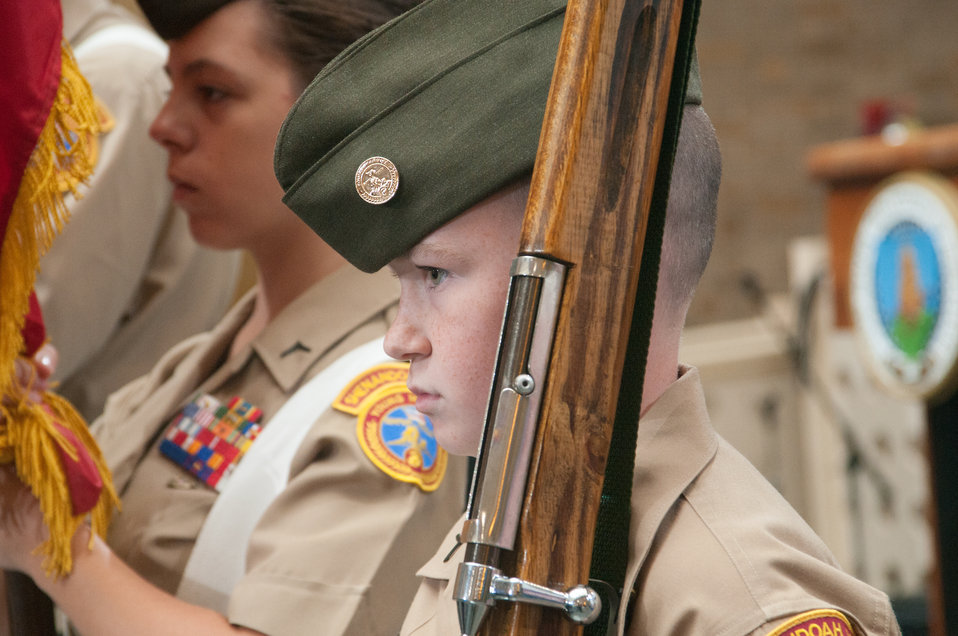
The Colors are presented by the Color Guard from the Young Marines of the Marine Corps League during the 2013 Combined Federal Campaign Opening Ceremony on Tuesday, Sept 17, 2013 in the Whitten Building, U.S. Department of Agriculture (USDA), Washington, D.C. Employees took personal time to attend and participate in fund raising activities that generated donations and donation registrations that will help support charities. The Combined Federal Campaign (CFC) is the largest and most successful workplace charitable giving drive in the world. CFC is the only authorized charitable organization solicitation of Federal employees in their workplaces. CFC is structured to support and to promote philanthropy through a voluntary program that is cost-efficient and effective in providing all Federal employees the opportunity to impact the CFC charitable interest of their choosing. For more information about CFC, please see www.usda.gov/wps/portal/usda/usdahome?navid=USDA CFC USDA Photo by Lance Cheung.